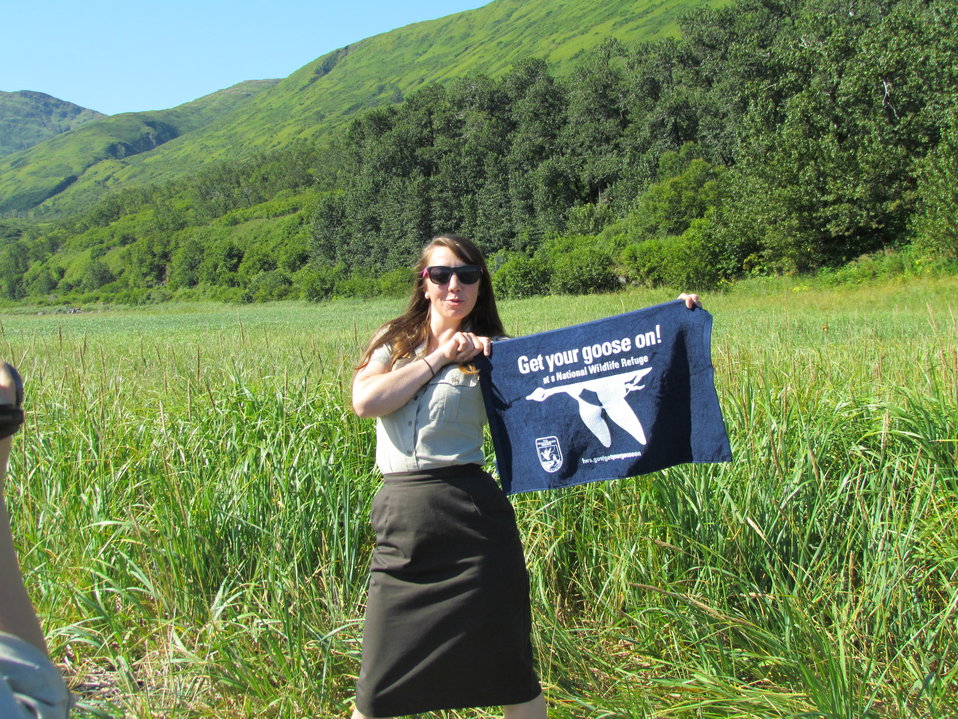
Get Your Goose On! - Alaska Style

Seasonal Park Ranger, Kari Eschenbacher

Credit: Shelly Lawson / USFWS

The Kodiak National Wildlife Refuge is a United States National Wildlife Refuge in the Kodiak Archipelago in southwestern Alaska, United States.

The Kodiak National Wildlife Refuge includes the southwestern two-thirds of Kodiak Island, Uganik Island, the Red Peaks area of Afognak Island and all of Ban Island in the archipelago. It encompasses 1,990,418 acres (8,054.94 km2).[2] The refuge is administered from offices in Kodiak.

The refuge contains seven major rivers and about 100 streams. It is a spawning ground for all six species of Pacific Ocean salmon, trout and several other fish species, as well as a nesting ground for 250 species of bird, many of which feed on salmon. The refuge has only six native species of mammals: Kodiak brown bear, red fox, river otter, ermine, little brown bat and tundra vole. The non-native mammals Sitka deer, mountain goat, Roosevelt elk, snowshoe hare and beaver were introduced to the archipelago between the 1920s and 1950s and are now hunted and trapped.

The climate of the refuge is that of southern Alaska, mild and rainy. Many areas in the refuge are densely forested with Sitka Spruce at lower elevations. There are grasslands in drier areas and at higher elevations. The refuge contains several small glaciers.